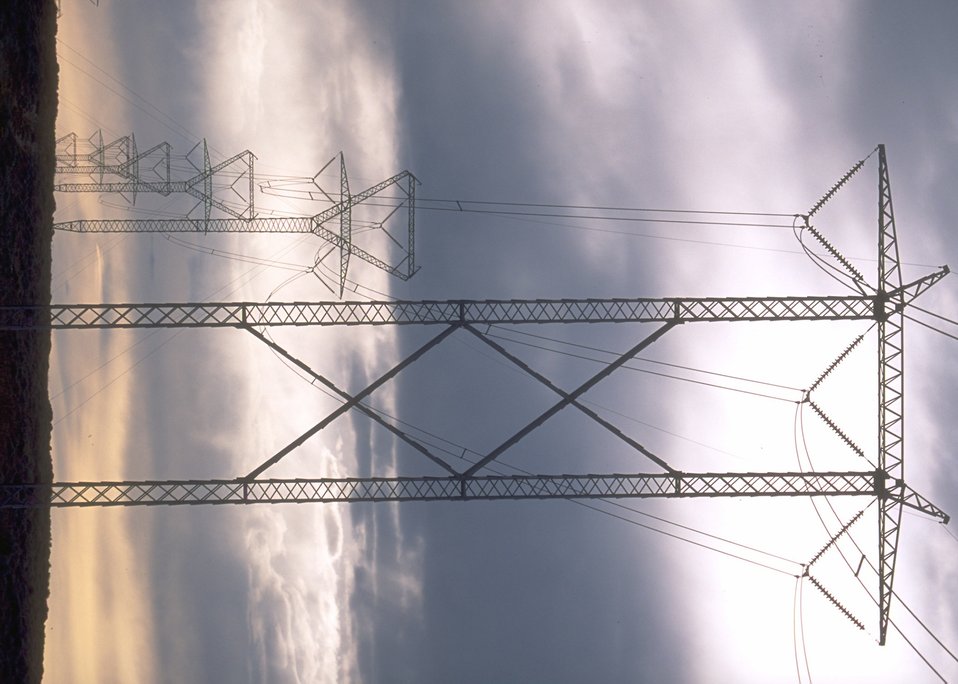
ROW's - Electric power lines near Rock Springs, WY.